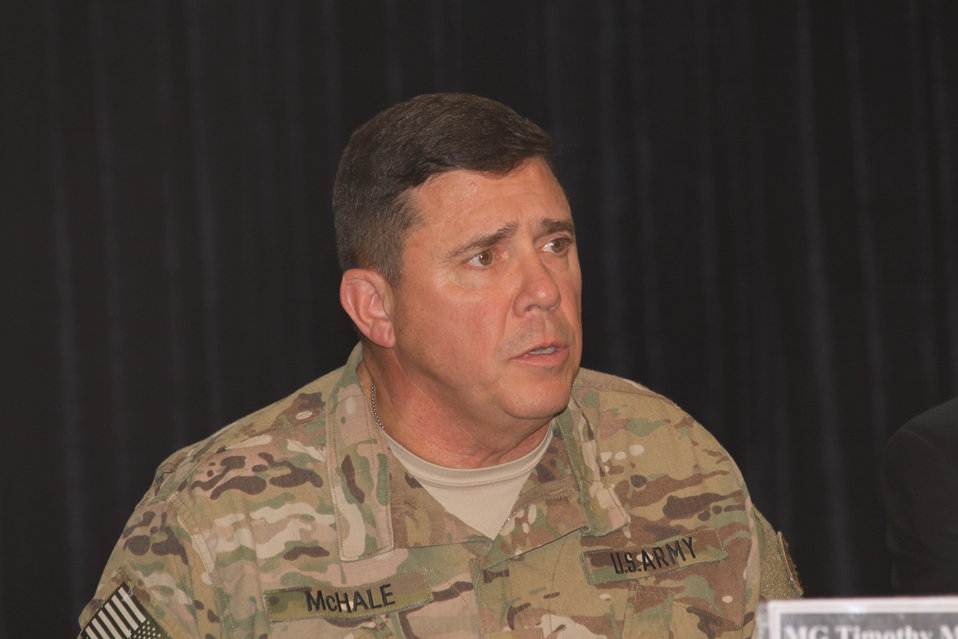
MG McHale